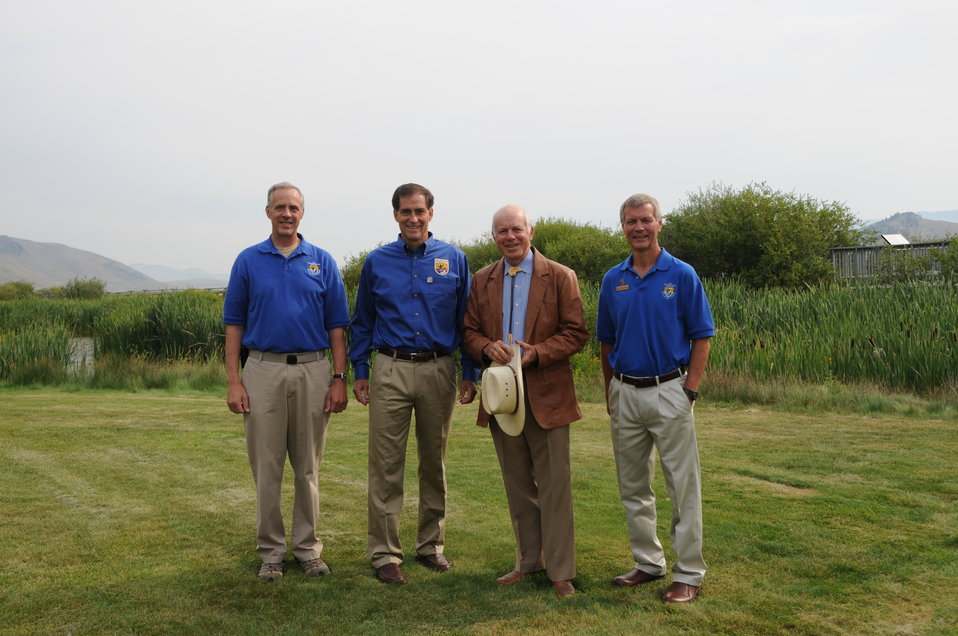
Several Speakers Gather Before the National Elk Refuge Centennial Ceremony

From left to right: USFWS Mountain-Prairie Regional Director Steve Guertin, USFWS Director Dan Ashe, Former USFWS Director John Turner, and National Elk Refuge Manager Steve Kallin. The four posed for a photo prior to the National Elk Refuge's centennial ceremony on the morning of August 10, 2012.